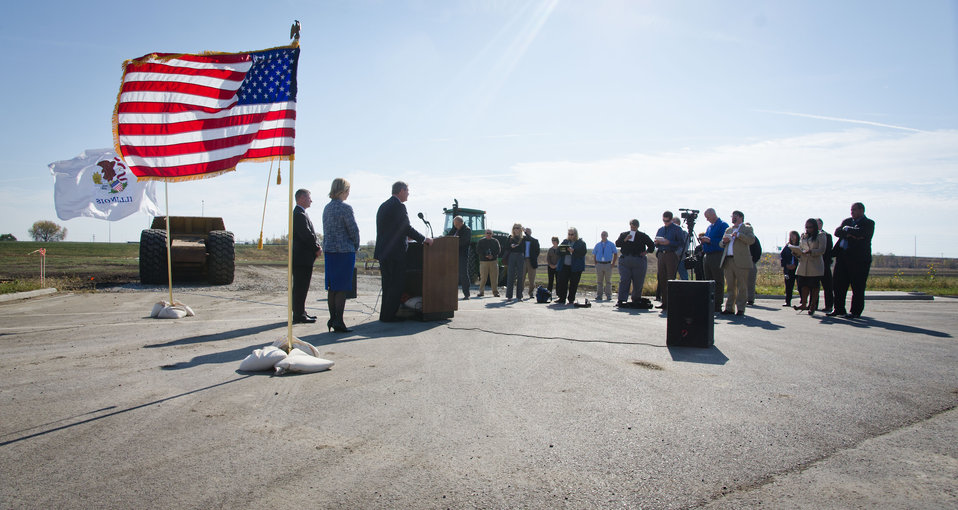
U.S. Department of Agriculture Secretary Tom Vilsack (at podium), Illinois Department of Transportation Acting Secretary of Transportation Ann Schneider (center) and Sangamon County Recorder of Deeds (left) visited a recently completed transportation project that extended the existing MacArthur Boulevard and new interchange with Interstate 72, that brought new businesses and 500 new jobs to Springfield, IL on November 2, 2011. Agriculture Secretary Tom Vilsack discussed the Administration's strategy to strengthen the U.S. economy and to highlight what passage of the American Jobs Act will mean for Illinois. 'The American Jobs Act provides common-sense steps we can take right now to put more people back to work and put more money in the pockets of working Americans, without adding a dime to the deficit,' said Secretary Vilsack. 'In Illinois, this Act will provide a tax cut for over 260,000 businesses, support the jobs of 14,500 teachers and first responders and immediately provide a job for over 20,700 construction workers through infrastructure improvements. A typical household in Illinois will receive a tax cut of around $1,640.'